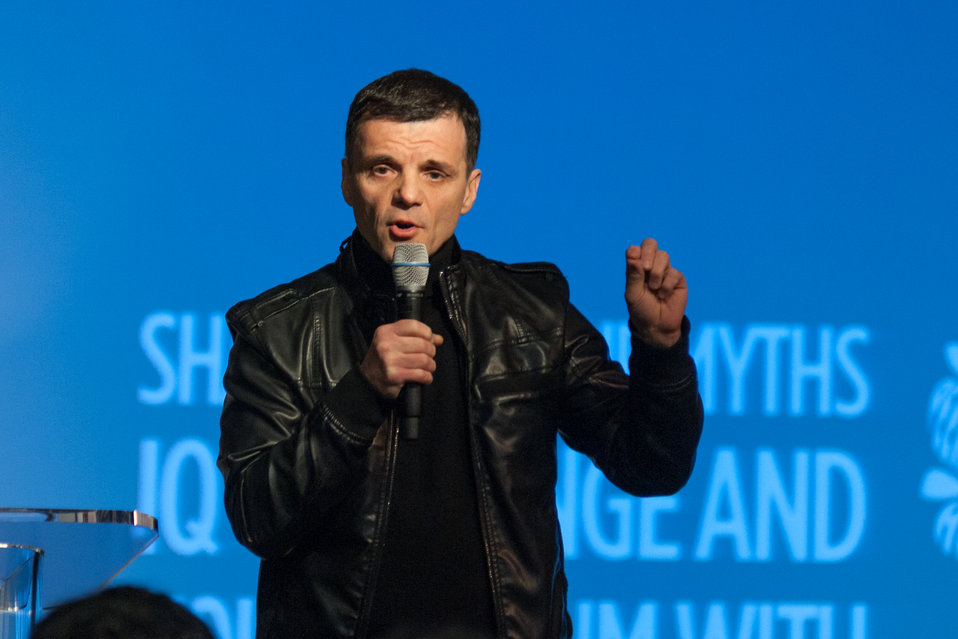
Mentor NDFW Event 2014

Mentor Foundation USA, in partnership with the National Institute on Drug Abuse (NIDA) and other key partners hosted a Youth Drug Facts Rally at the House of Sweden on Thursday, 30th January 2014. Approximately 200 students from five local high schools attended and had the opportunity to interact with top U.S. scientific experts, including Dr. Ruben Baler of NIDA and inspiring guest speakers to “shatter the myths” about drugs and substance abuse, while pledging to stay drug-free.